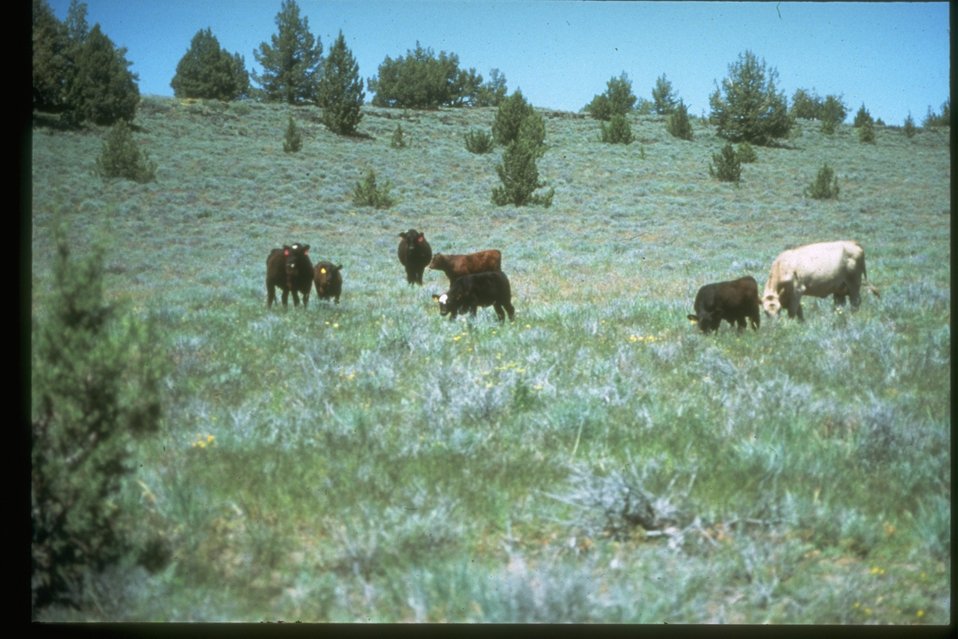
Cattle grazing.